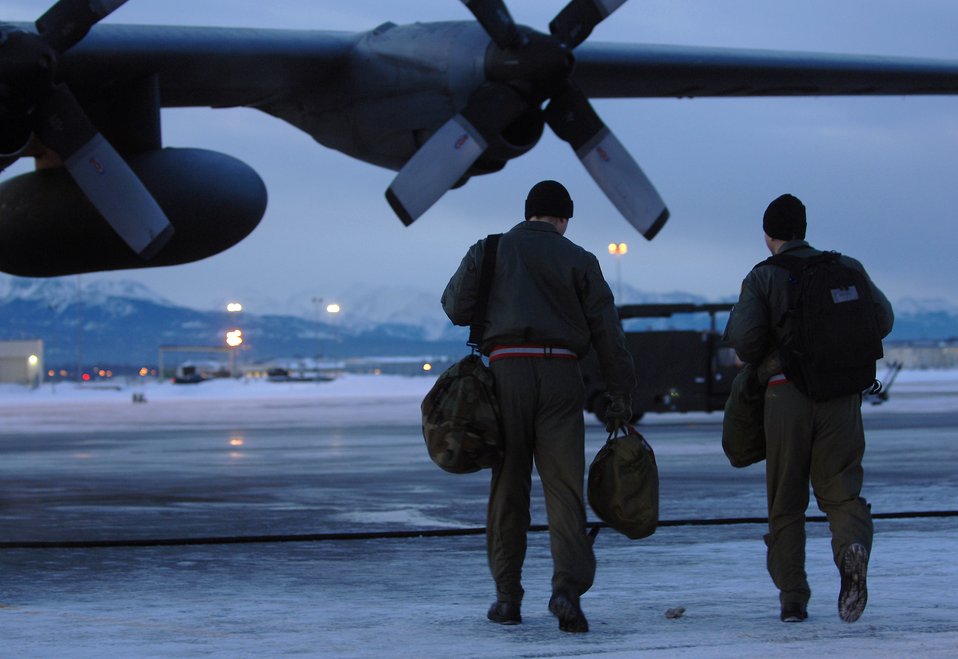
Baby, it's cold outside

Two C-130 Hercules aircrew members walk to their aircraft before taking off on a training mission Feb. 15 from Elmendorf Air Force Base, Alaska. The crew members are assigned to the 517th Airlift Squadron.